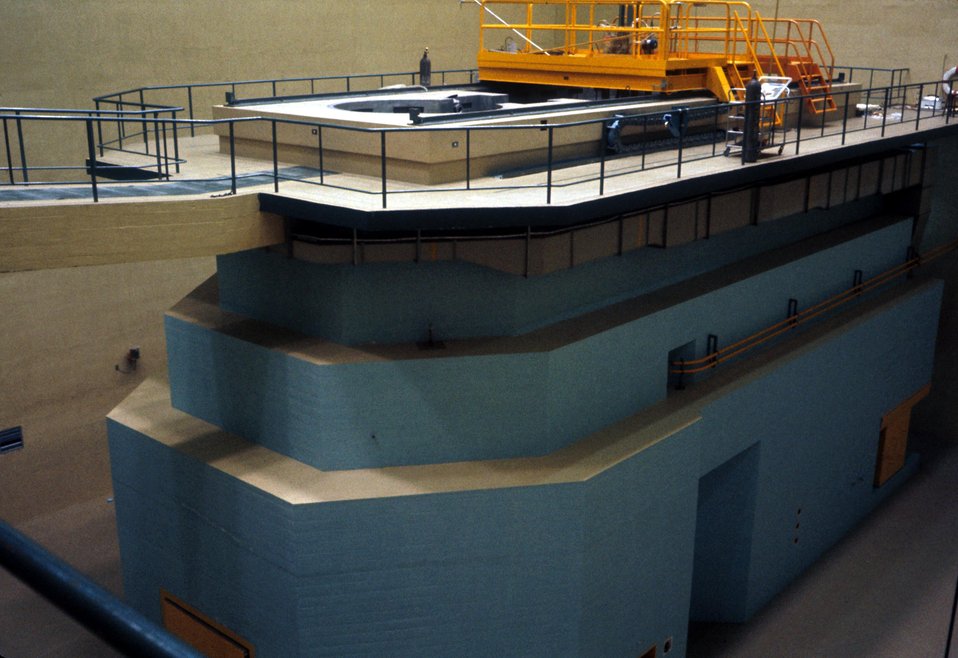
View THU Reactor pool and Biol. Shield. Chinese Atoms for Peace Reactor -- GE. c. 1961